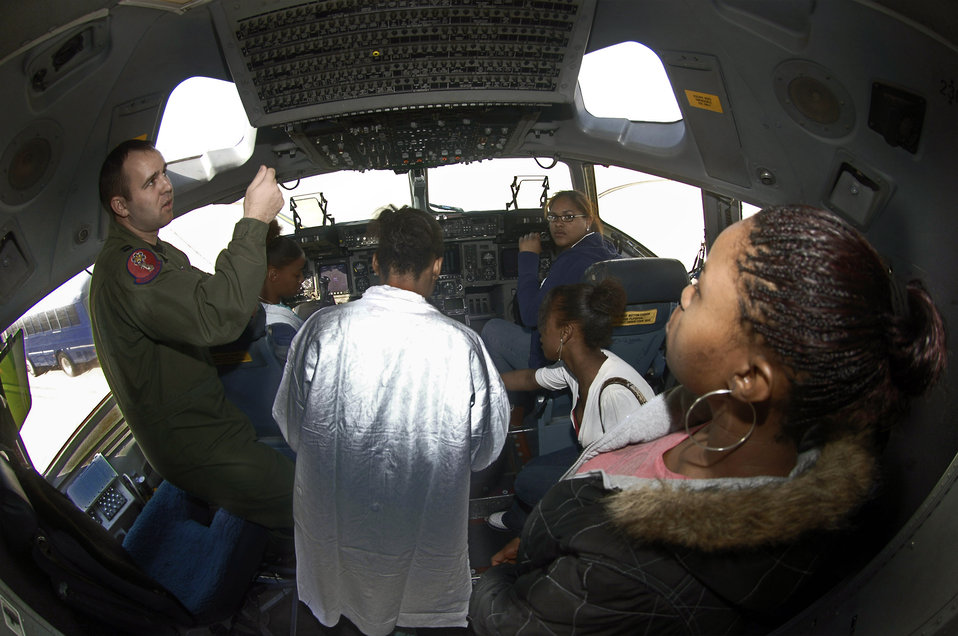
Showing off the flight deck

C-17 Globemaster III pilot Capt. Vernon Martens explains the capabilities of the C-17 during Career Day at Altus Air Force Base, Okla., March 25. Half of the 118 high school students toured the Globemaster, while the others toured the KC-135 Stratotanker.